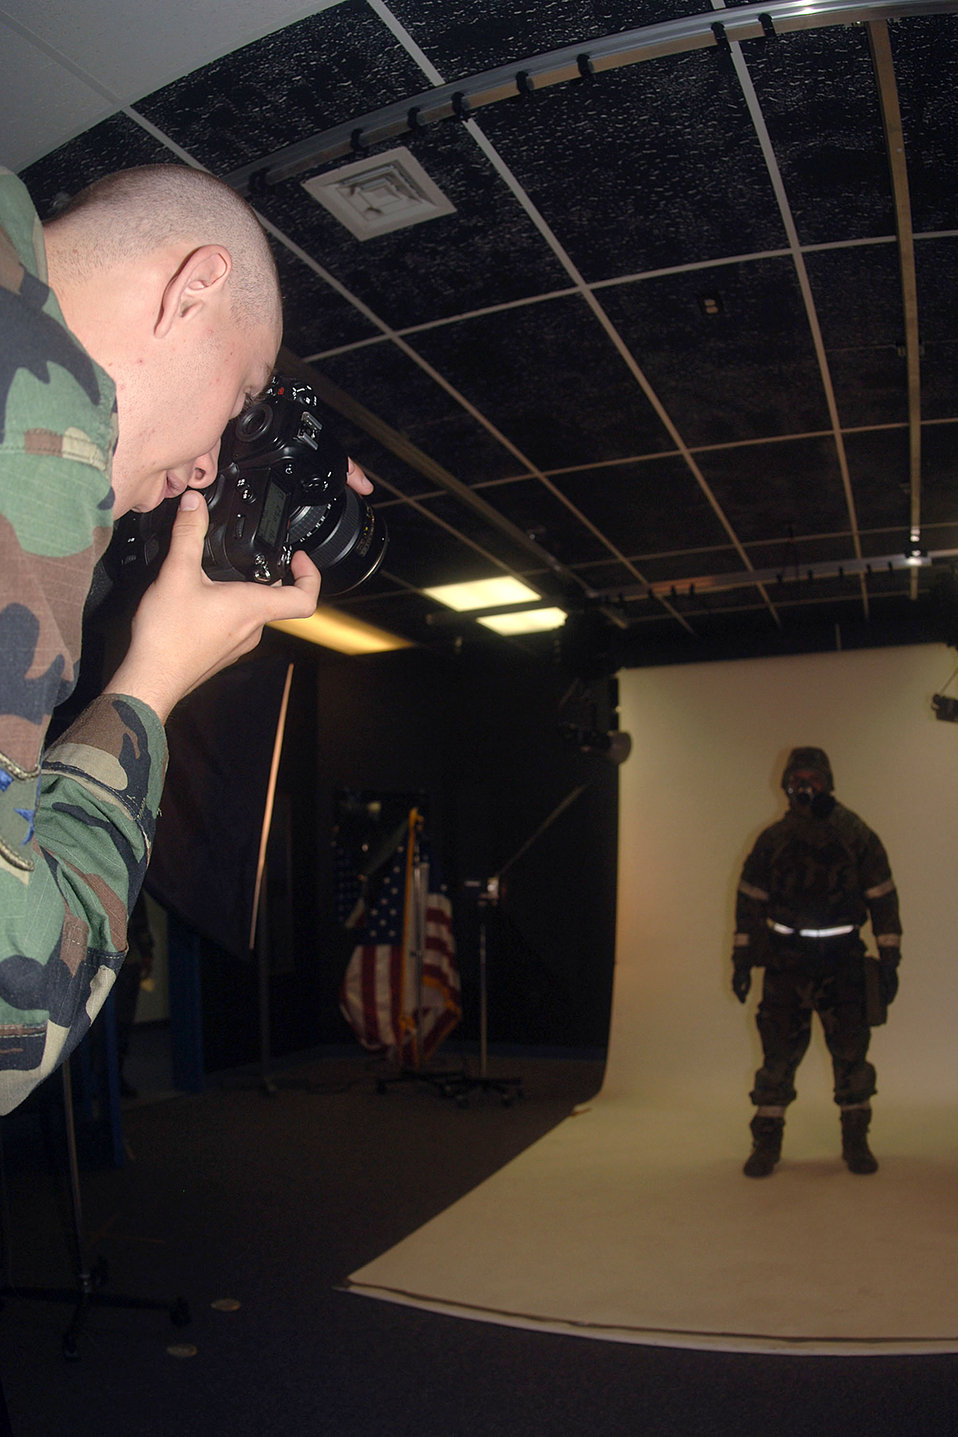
Chemical gear

Airman 1st Class Anthony Sanchelli takes photos of Airman 1st Class Kristopher Kingan in his chemical gear at Ellsworth Air Force Base, S.D., on July 10. The photos will be made into posters for the base's upcoming operational readiness inspection. Both Airmen are with the 28th Communications Squadron.